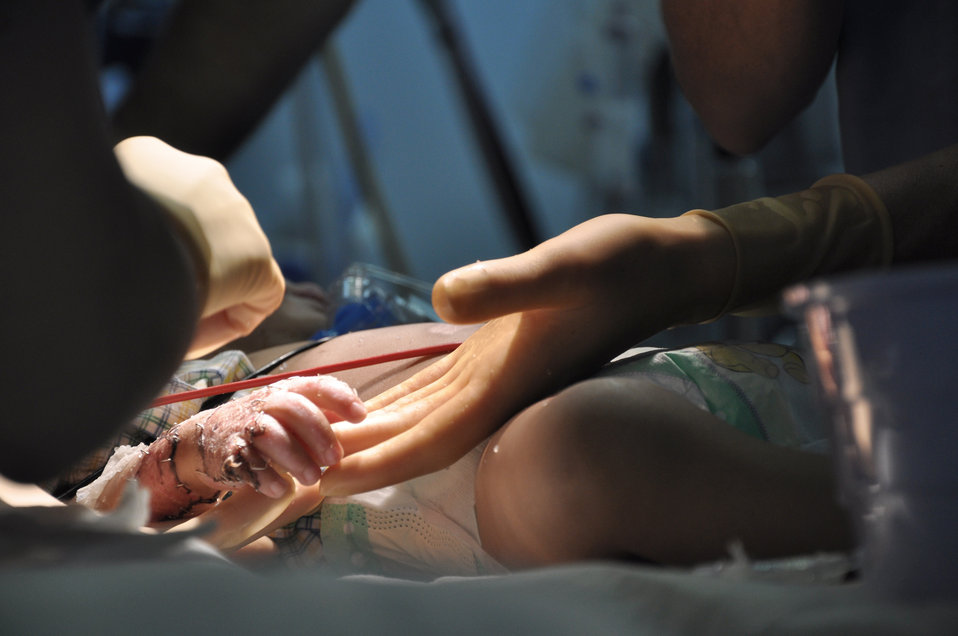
Family treated at CJTH

An Airman at the Craig Joint Theater Hospital repositions the hand of a 12-month-old Afghan boy during a procedure in the operating room Jan. 9, 2011, at Bagram Airfield, Afghanistan. The boy was brought to the hospital with significant burns from a propane tank explosion at his home in the Kapisa province.